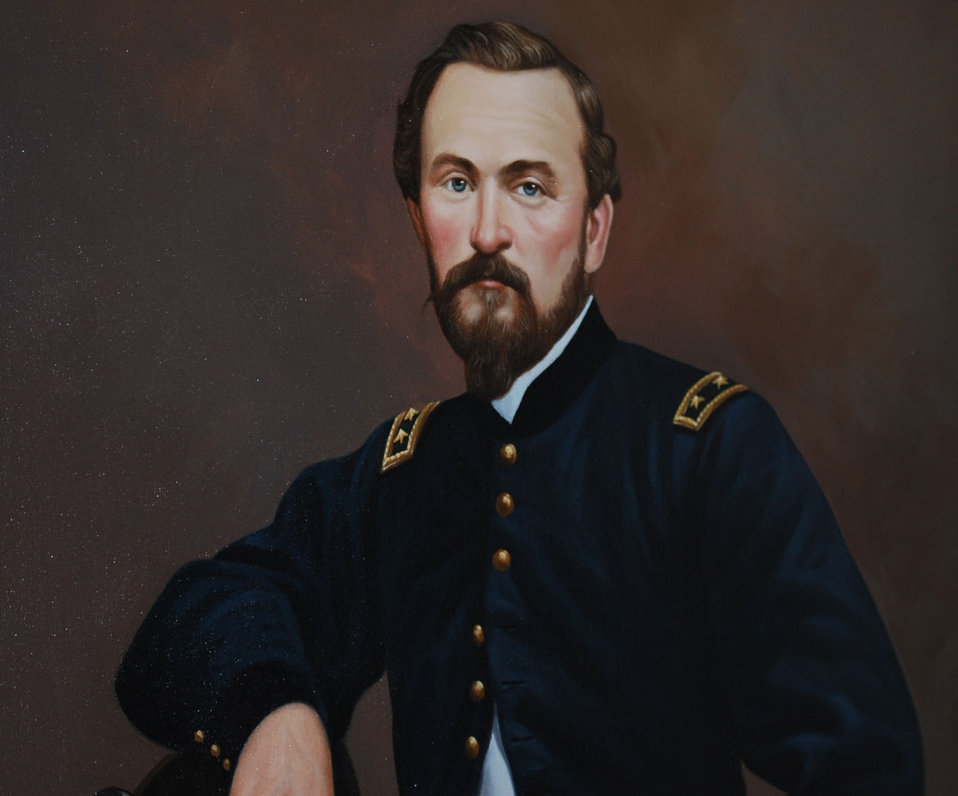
Oil painting

Oil panting gen. james harrison.